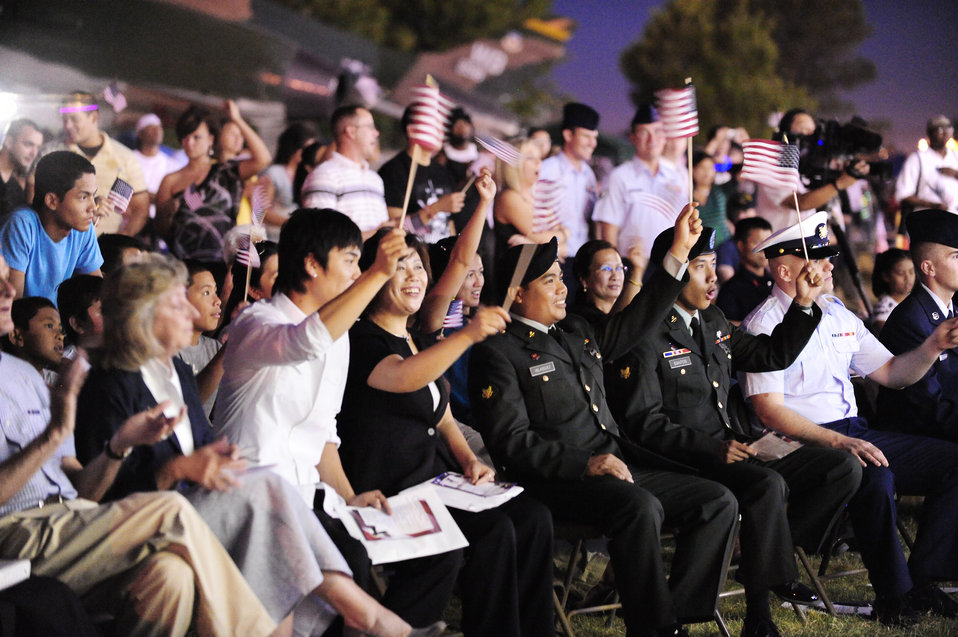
Nellis welcomes newest citizens during Freedom Fest

U.S. servicemembers and their families proudly wave the American flag July 4 during a naturalization ceremony at the Freedom Fest celebration in Nellis Air Force Base, Nev. The applicants included members of the Air Force, Army, Navy Reserve and Coast Guard. Members hailed from Armenia, Cameroon, Colombia, Mexico, the Philippines and South Korea. One candidate, Airman 1st Class Sun Woong Whang was sworn in along with his mother and brother.